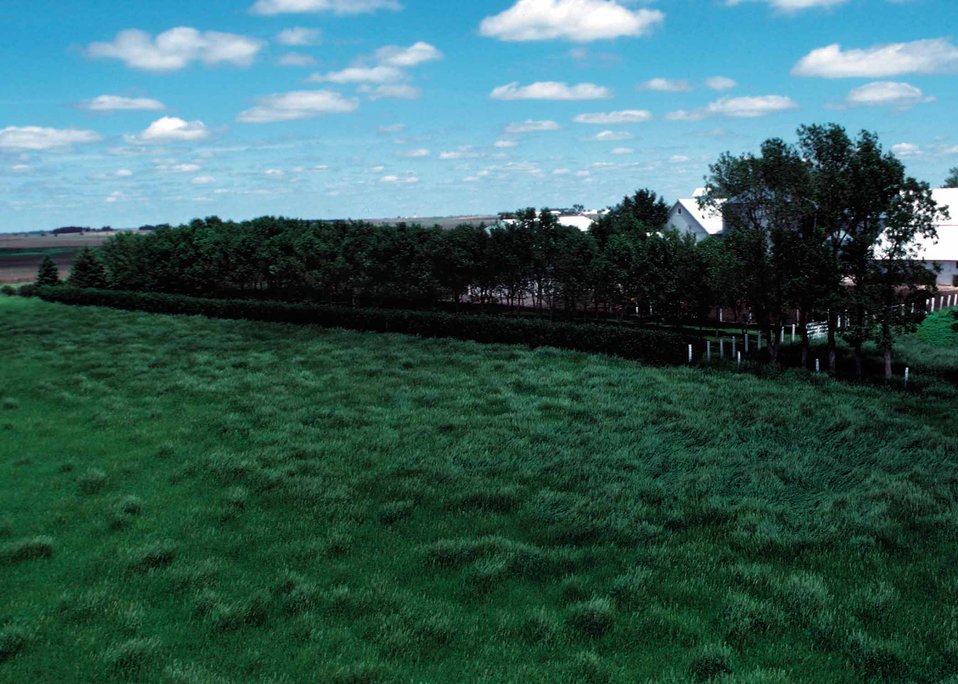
Farmstead windbreak in Pocahontas County.